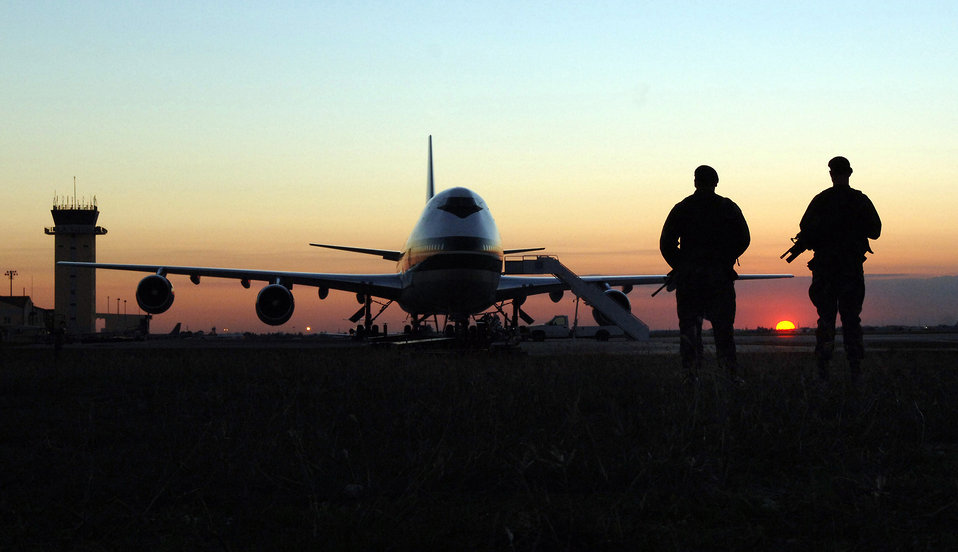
Active flightline

Two security forces airmen patrol the runway at Incirlik Air Base, Turkey, Nov. 15. More than half of all air cargo delivered to support Operation Iraqi Freedom is processed through here. Due to the close proximity of Incirlik to Iraq and the ability to land at more and smaller runways, flights from here have kept at least 3,300 convoy trucks and 9,000 servicemembers from harm's way.